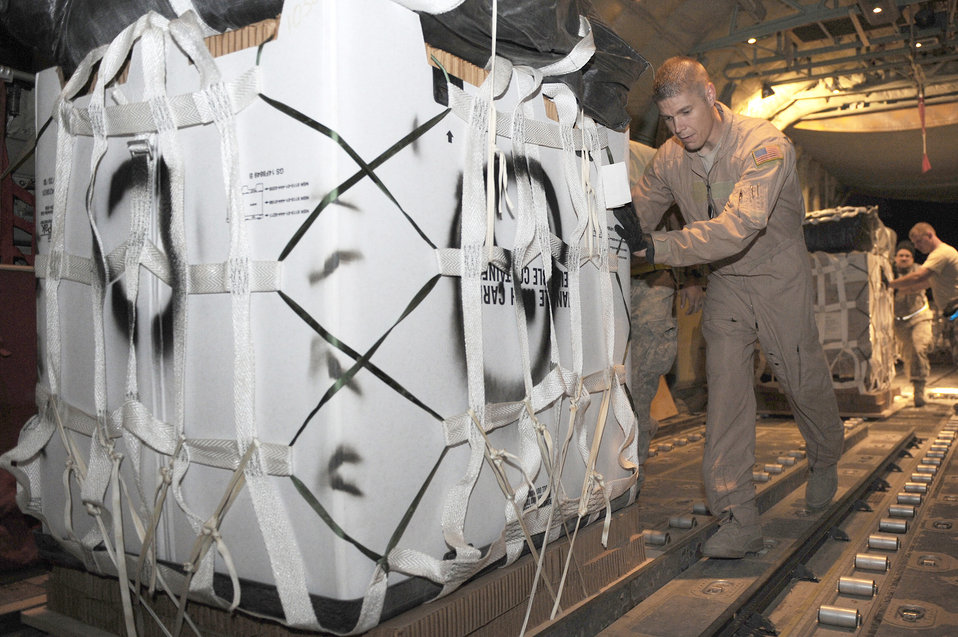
Supplies to remote Afghanistan bases

Staff Sgt. T.J. Grover pushes a container delivery system into a C-130J Super Hercules Oct. 7, 2010, at Kandahar Airfield, Afghanistan. Sergeant Grover is a loadmaster with the 772nd Expeditionary Airlift Squadron, and hails from Columbus, Ga.